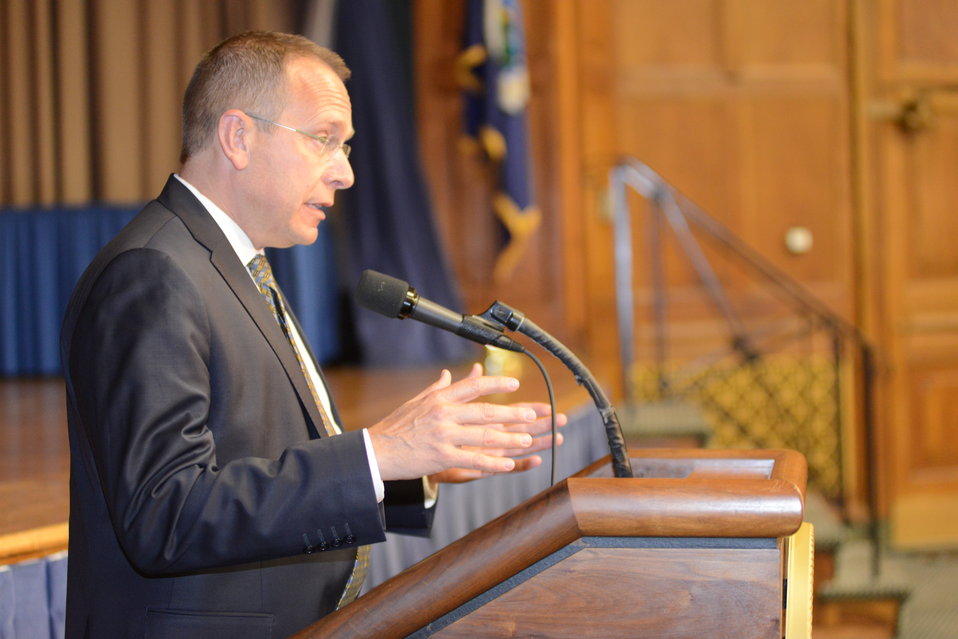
U.S. Department of Agriculture (USDA) Foreign Agricultural Service (FAS) Administrator Phil Karsting makes closing remarks at the 2014 Lesbian/Gay/Bisexual/Transgender (LGBT) Pride Observance event held in the Jefferson Auditorium at USDA in Washington, D.C. on Thursday, Jun. 5, 2014.